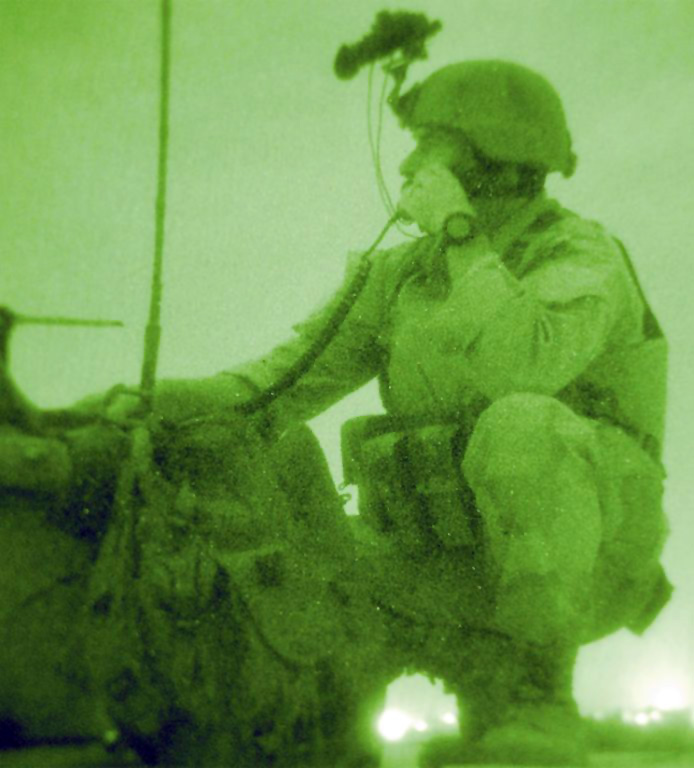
Enlisted TACP control close air support

Tech. Sgt. Donnavon Huss controls F-16s in a live-drop mission Nov. 8, 2003.